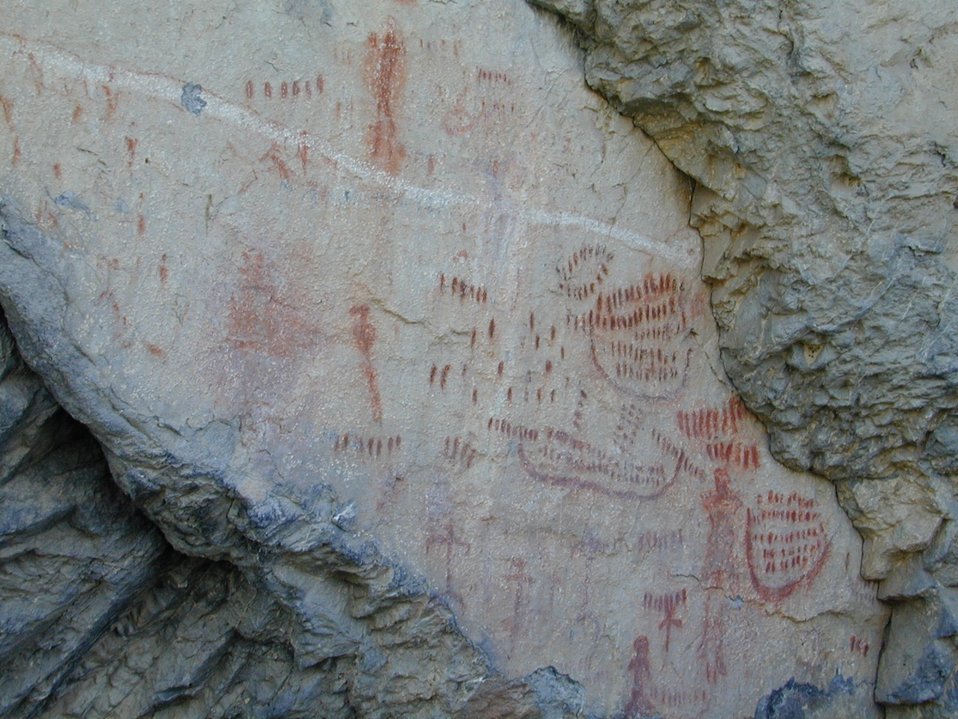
Birch Creek Valley